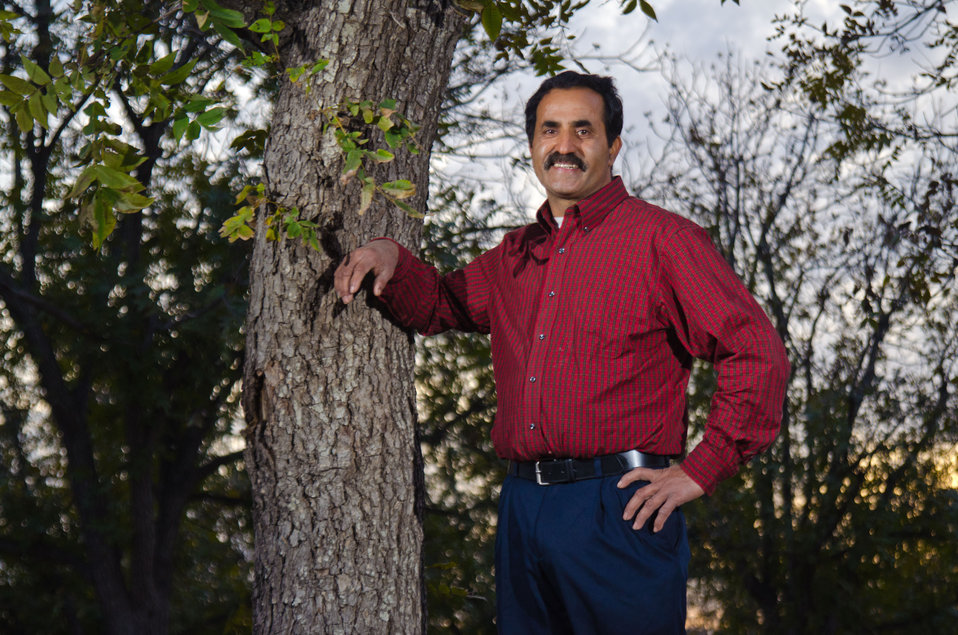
Arrowhead Farms of Crystal City, TX, on Friday, December 9, 2011, has been owned by Mr. Akram Mohammad, a pecan farmer since 2005. The 719 acre farm with 10,000 trees, features some orchards with underground micro irrigation system that feeds water to the roots of 4,380 pecan trees on 146 acres. Mr. Mohammad said, “USDA (U.S. Department of Agriculture) was essential to my business and trees surviving the recent exceptional drought. The trees were stress free thanks to underground micro-irrigation. This is essential to the future growth of Texas agriculture and good for America.” U.S. Department of Agriculture’s (USDA) Environmental Quality Initiative Program (EQIP) awarded Mr. Mohammad a $130,000 grant in 2008. He provided $26,000 for the balance of the $156,000 total cost to install a 146-acre underground micro-irrigation for 4,380 trees.